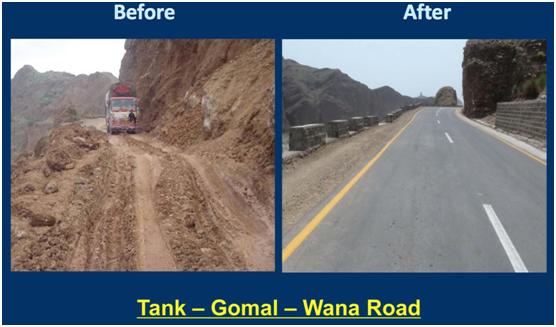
Tank- Gomal- Wana Road.

Before and After of Tank- Gomal- Wana Road.